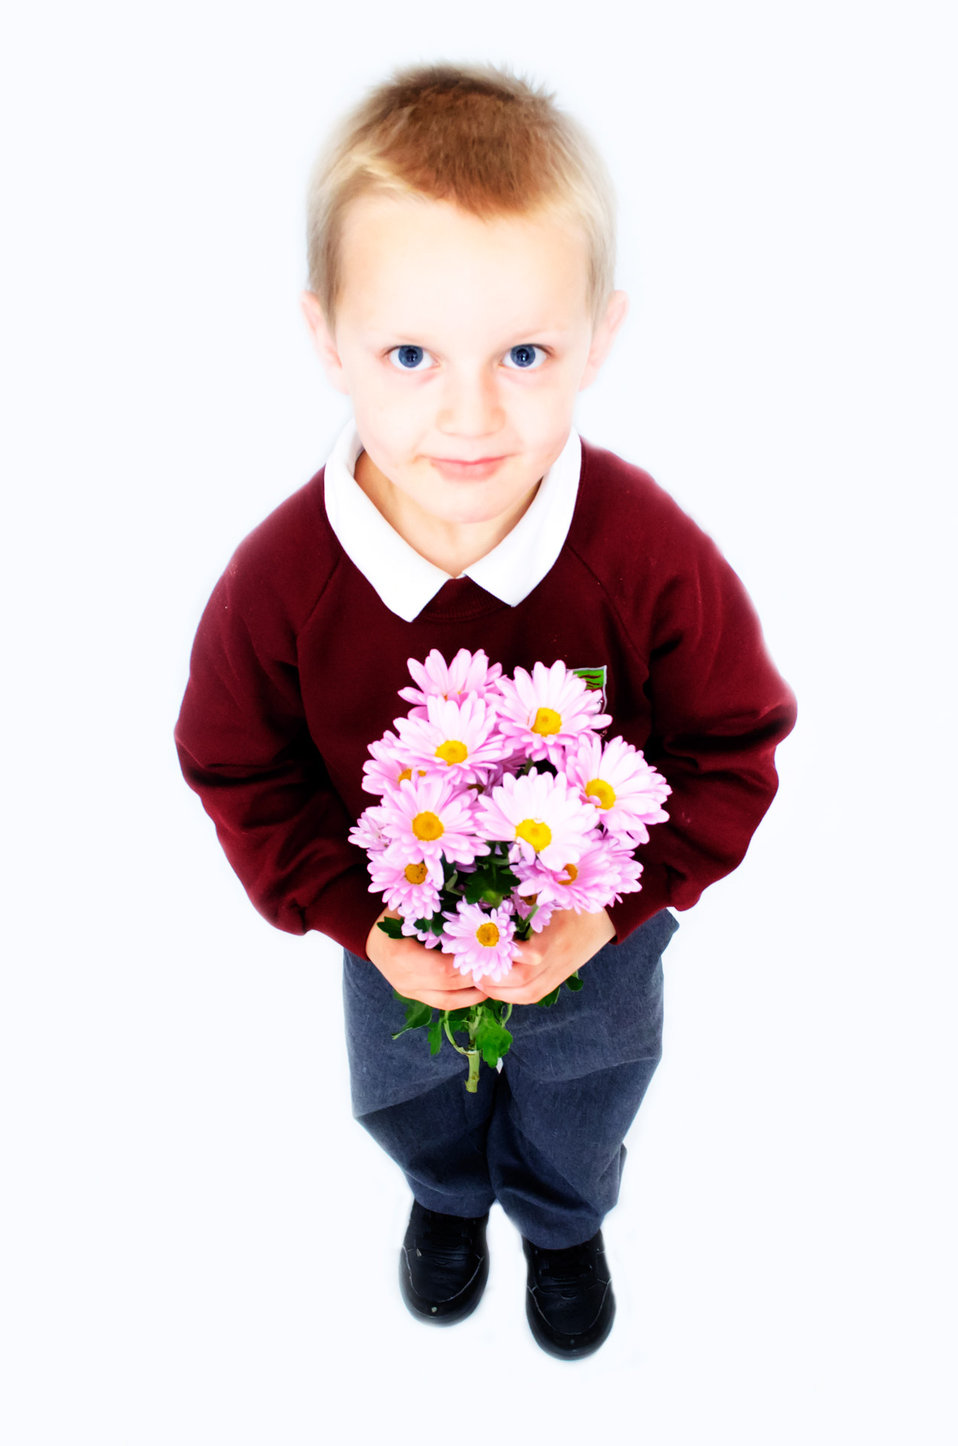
Child and flowers

Smiling boy holding a bouquet - isolated on white.